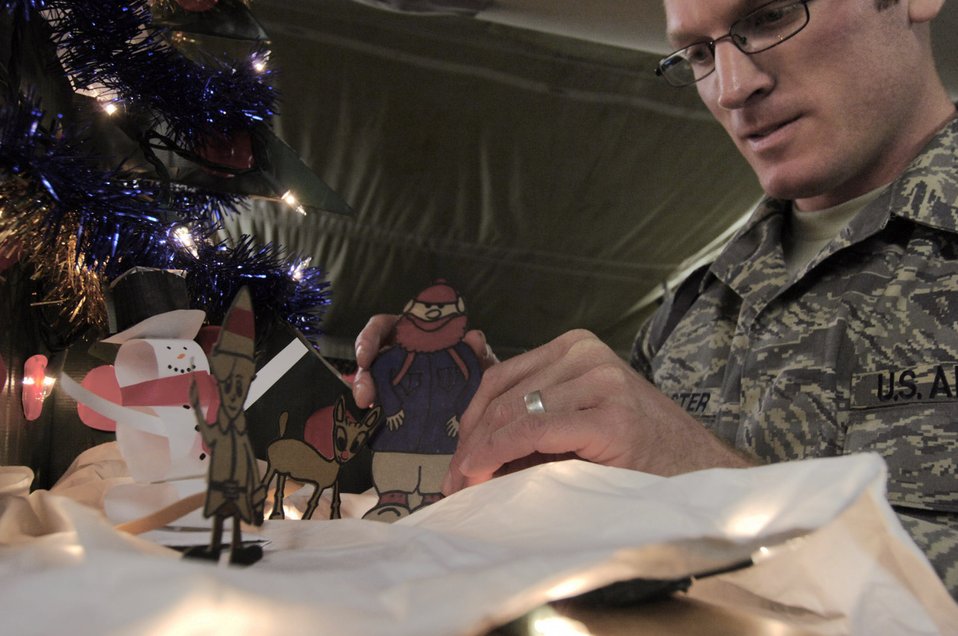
Holiday spirit in Afghanistan

Tech. Sgt. Ryan McMaster places cartoon characters in a holiday diorama next to a tree Dec. 14 at Bagram Air Base, Afghanistan. He created both from locally-procured materials. Sergeant McMaster is an aircrew life support technician with the 774th Expeditionary Airlift Squadron.